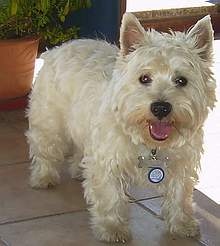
中文: 一只“微笑”的西高.